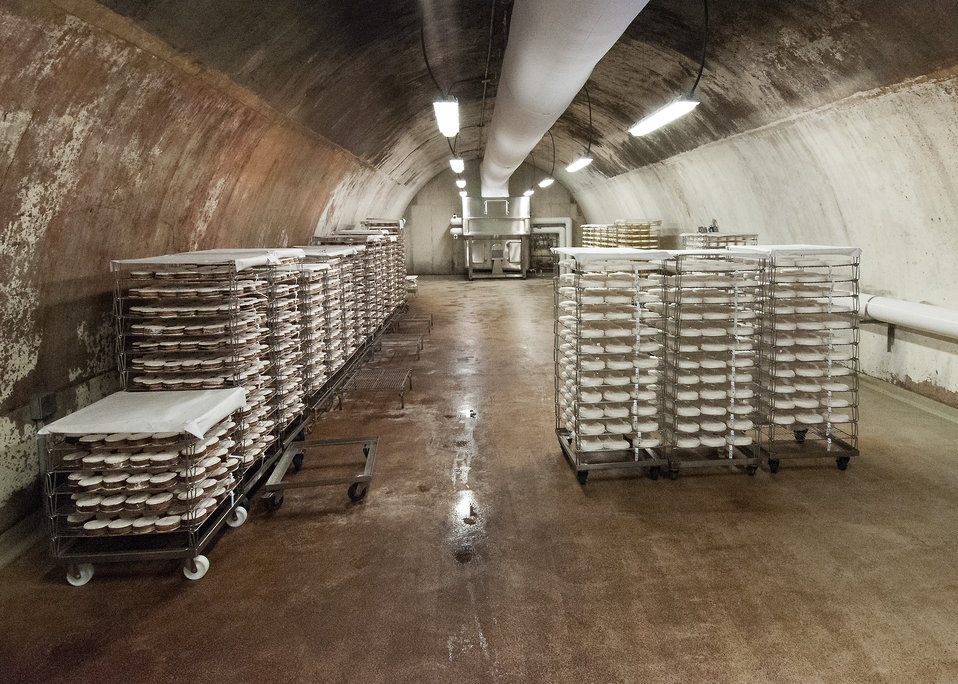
One of the seven aging caves at The Cellars at Jasper Hill in Greensboro, VT. Jasper Hill provides aging expertise, distribution and marketing services for their own and local cheese makers. The Cellars at Jasper Hill an innovative 22,000 square foot underground facility consisting of seven ageing caves received a U.S. Department of Agriculture (USDA) Rural Development (RD) Business and Industry Guaranteed (BIG) Loan. This loan was used to construct state-of-the-art artesian cheese aging cave facility to support expanded on-farm value-added cheese production as well as contract aging for other local cheese makers so they may access the growing market for artisan cheese nationwide on Sep. 19, 2013.